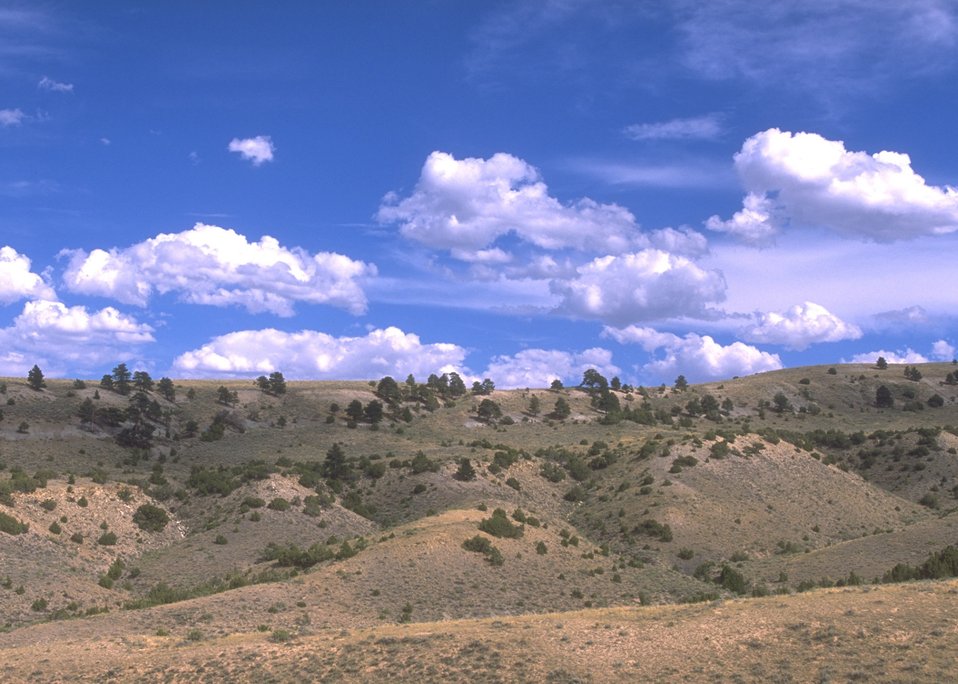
Landscape along the Alcova/Seminoe Back Country Byway south of Alcove, Rawlins Field Office.